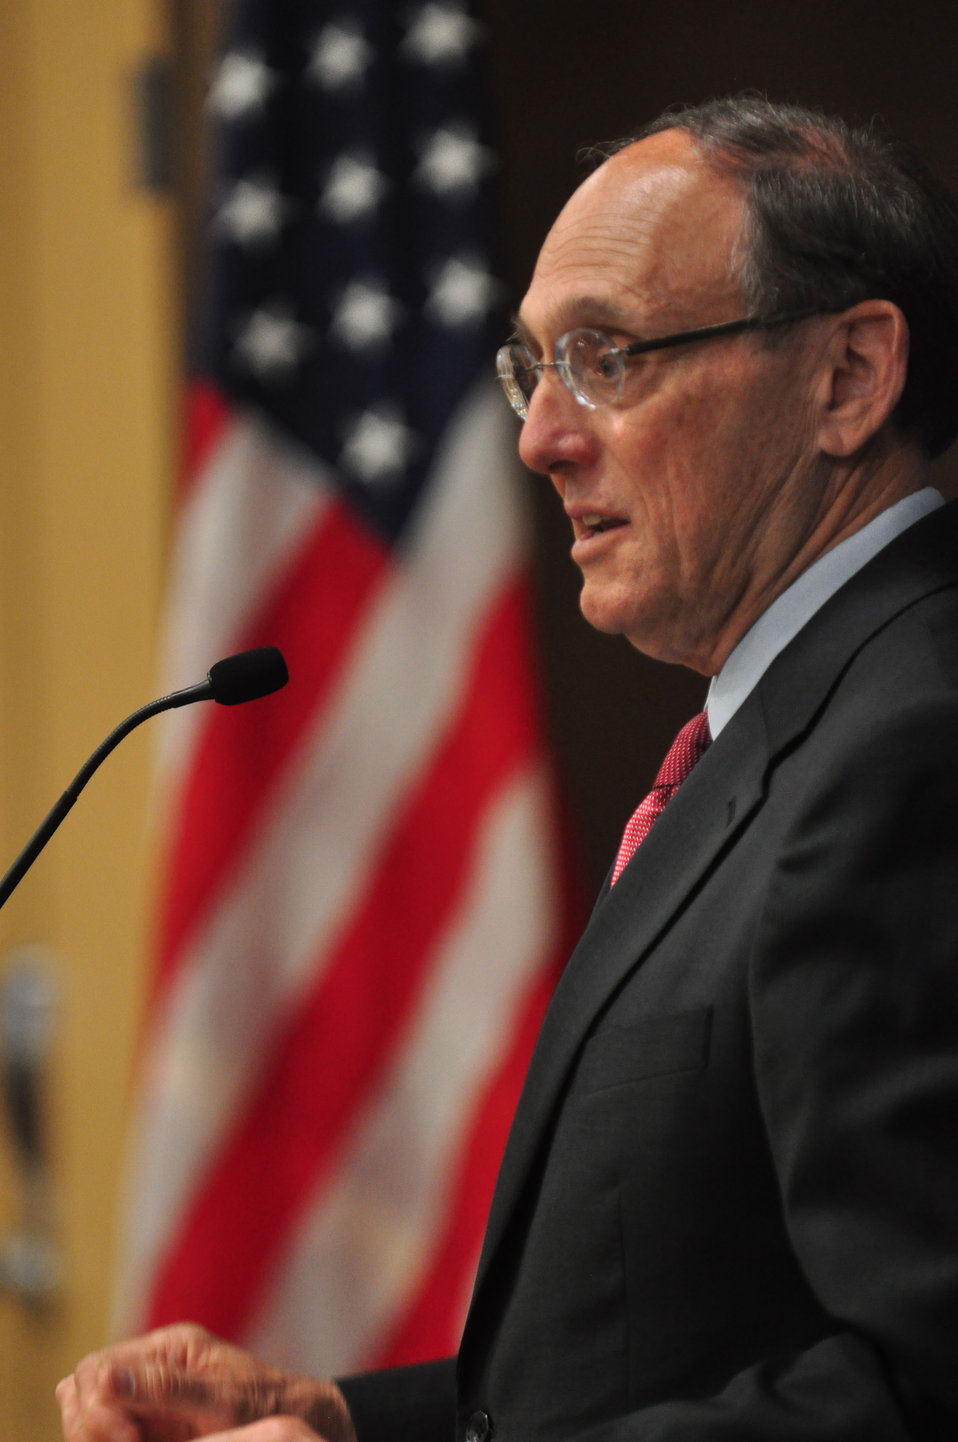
Congressman Phil Roe Tennessee Valley Corridor Summit Oak Ridge

13-062 DOE photo Lynn Freeny 5-29-2013 Oak Ridge Tennessee